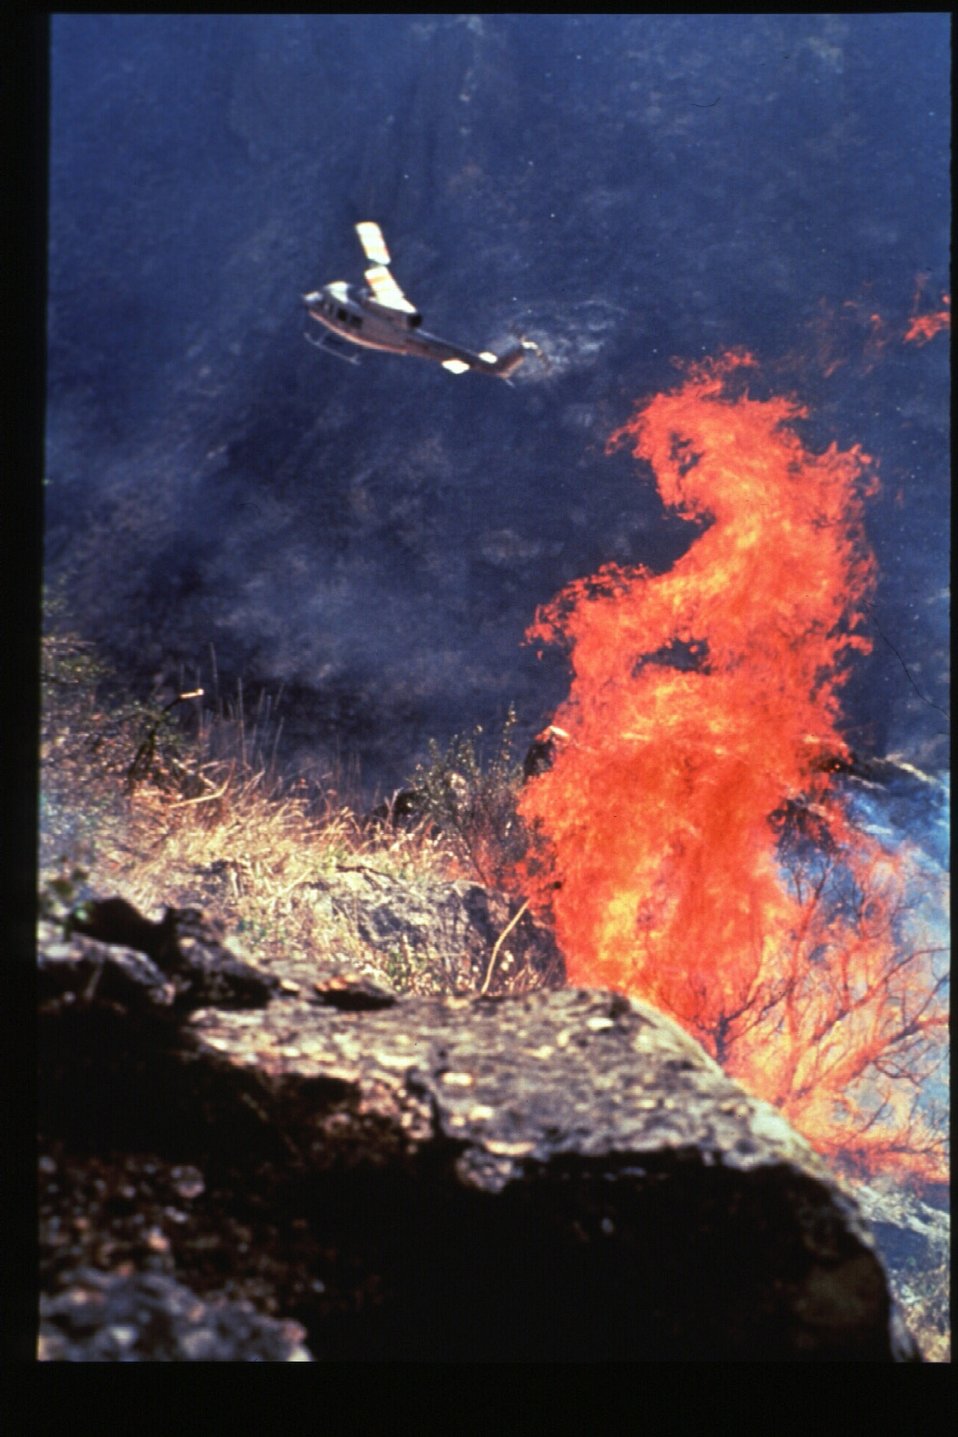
Boise Foothills Fire Danskin Mountains and South Fork of Boise River Helicopter Four River Field Office LSRD Lower Snake River District